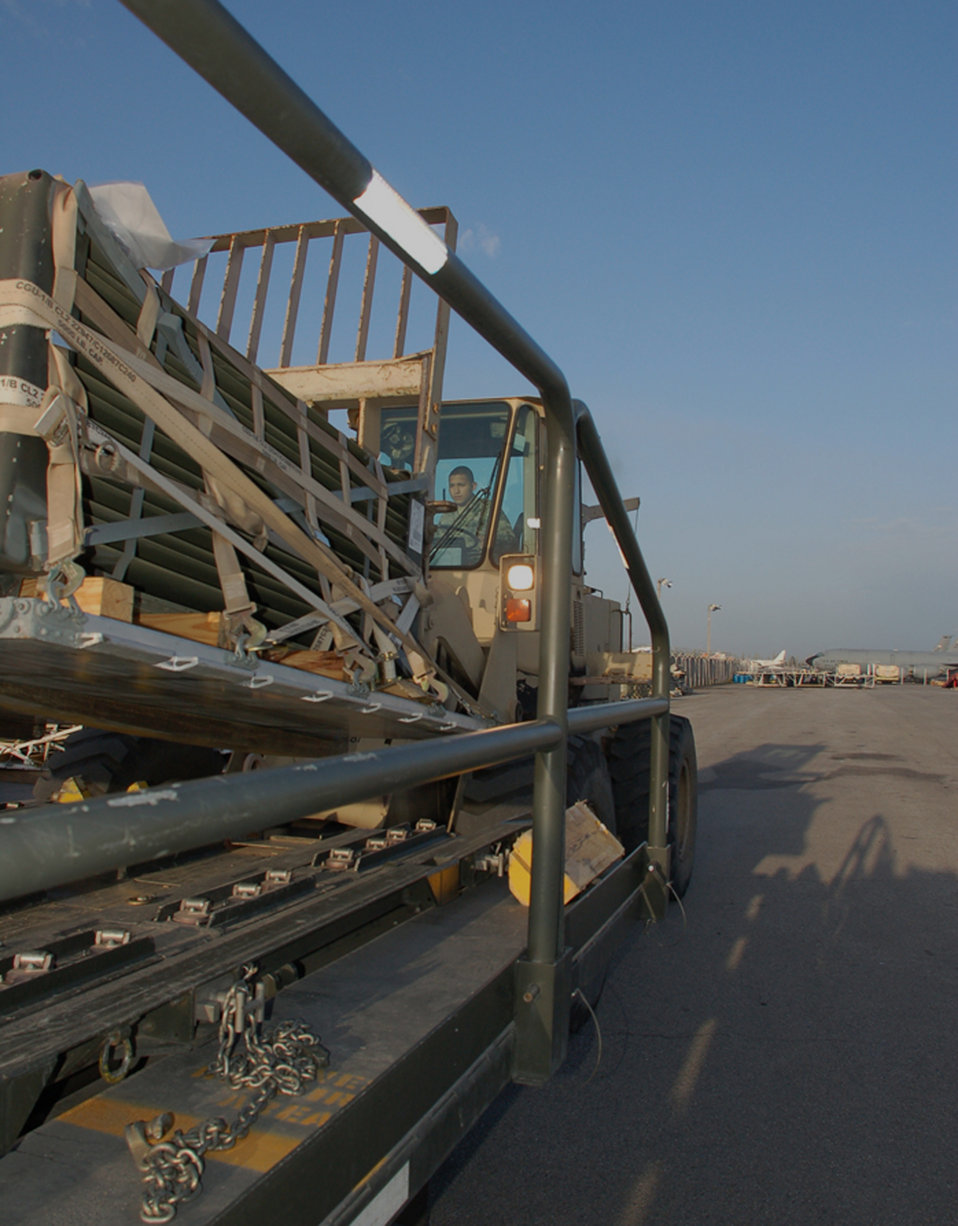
C-17 stage crew ramp up support for OEF

Airman 1st Class Roberto Armas unloads pallets April 17 at Manas Air Base, Kyrgyzstan. For the past five weeks the ATOC team has been supporting three C-17 Globemaster III aircrews from Pacific Air Forces who have been flying three flights nearly every day in order to deliver needed supplies to support the buildup of various bases supporting Operation Enduring Freedom. Airman Armas, an air transportation journeyman with the 376th Expeditionary Logistics Readiness Squadron, is deployed from the 62nd Aerial Port Squadron at McChord Air Force Base, Wash.